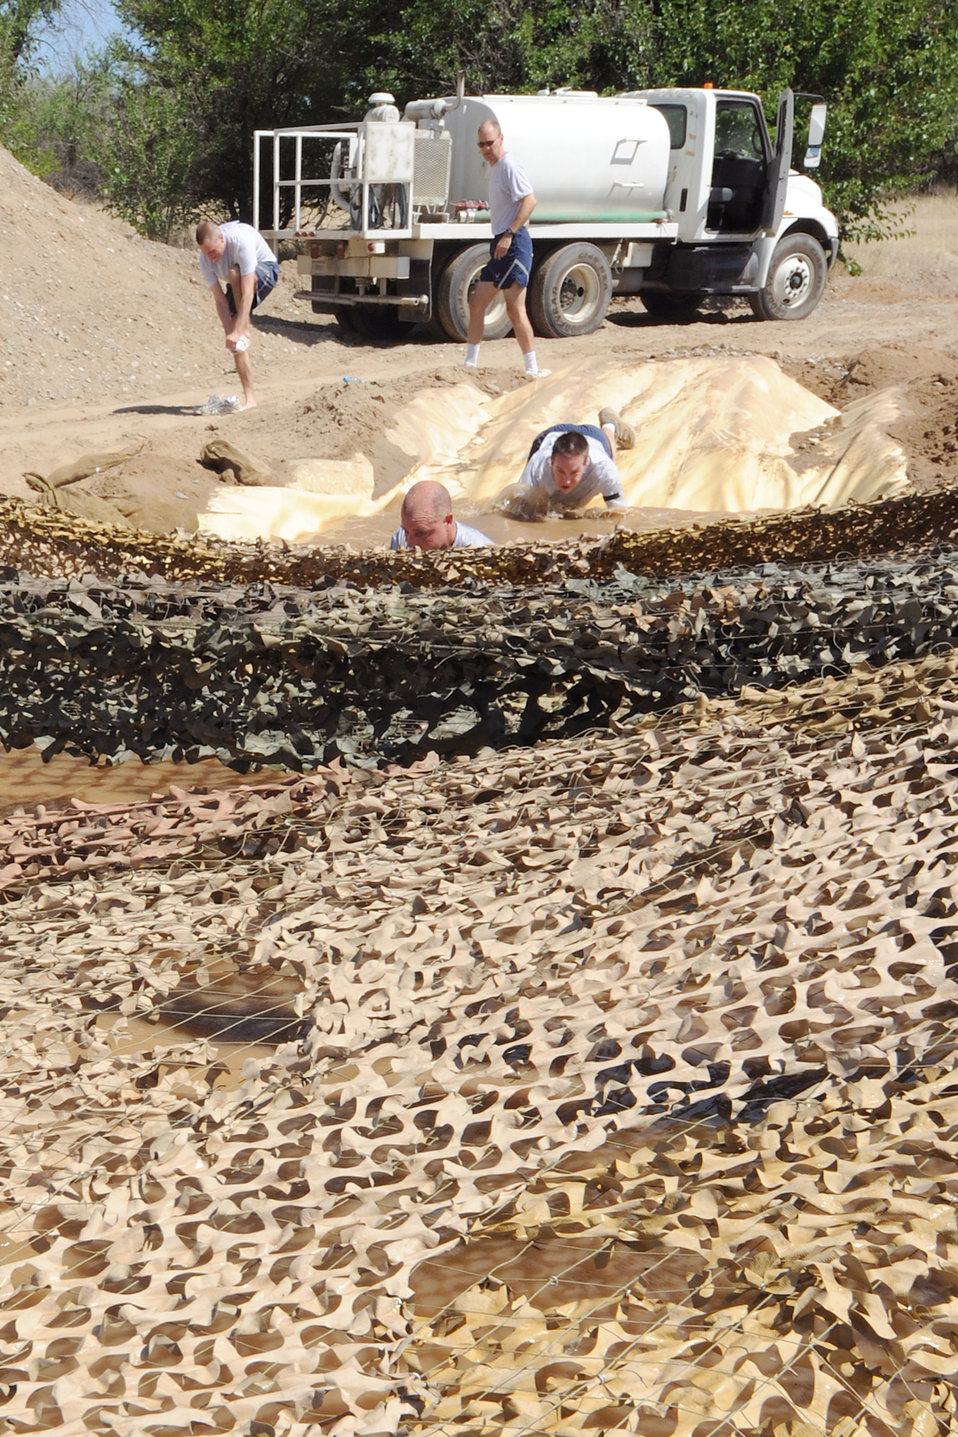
Kyrgystan 5K Mud Run

Airmen trudge through a mud pit during the 5K mud run at the Transit Center at Manas, Kyrgyzstan, July 11, 2010.